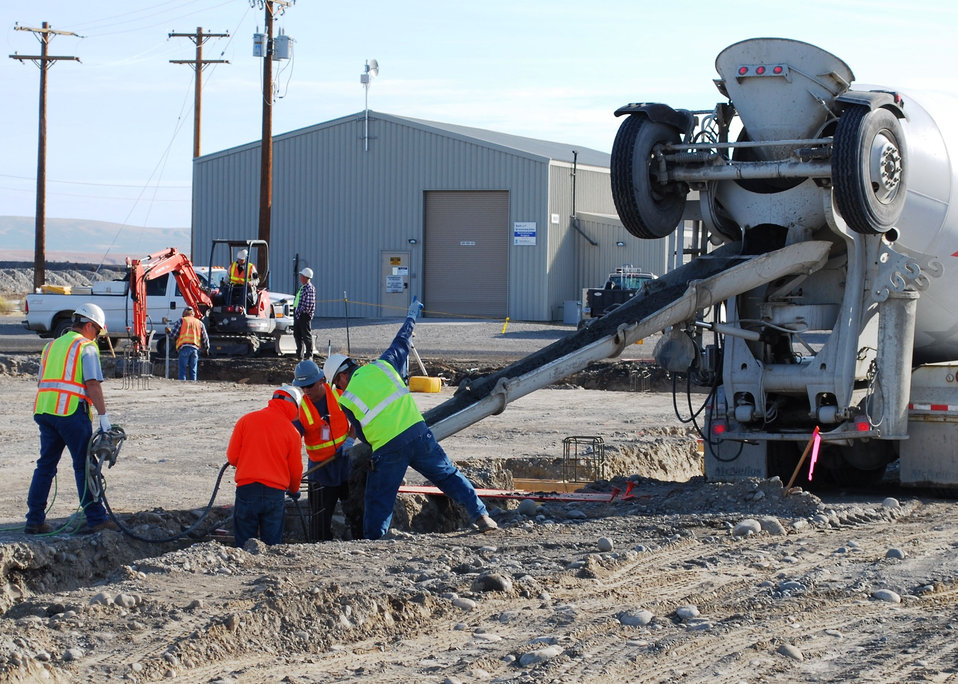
DX Groundwater Treatment Facility concrete pour

Workers pour concrete for the facility footing of CH2M HILL’s DX Groundwater Treatment Facility that will be constructed in the 100 D Area. When finished, the pump-and-treat system will treat hexavalent chromium in the groundwater.